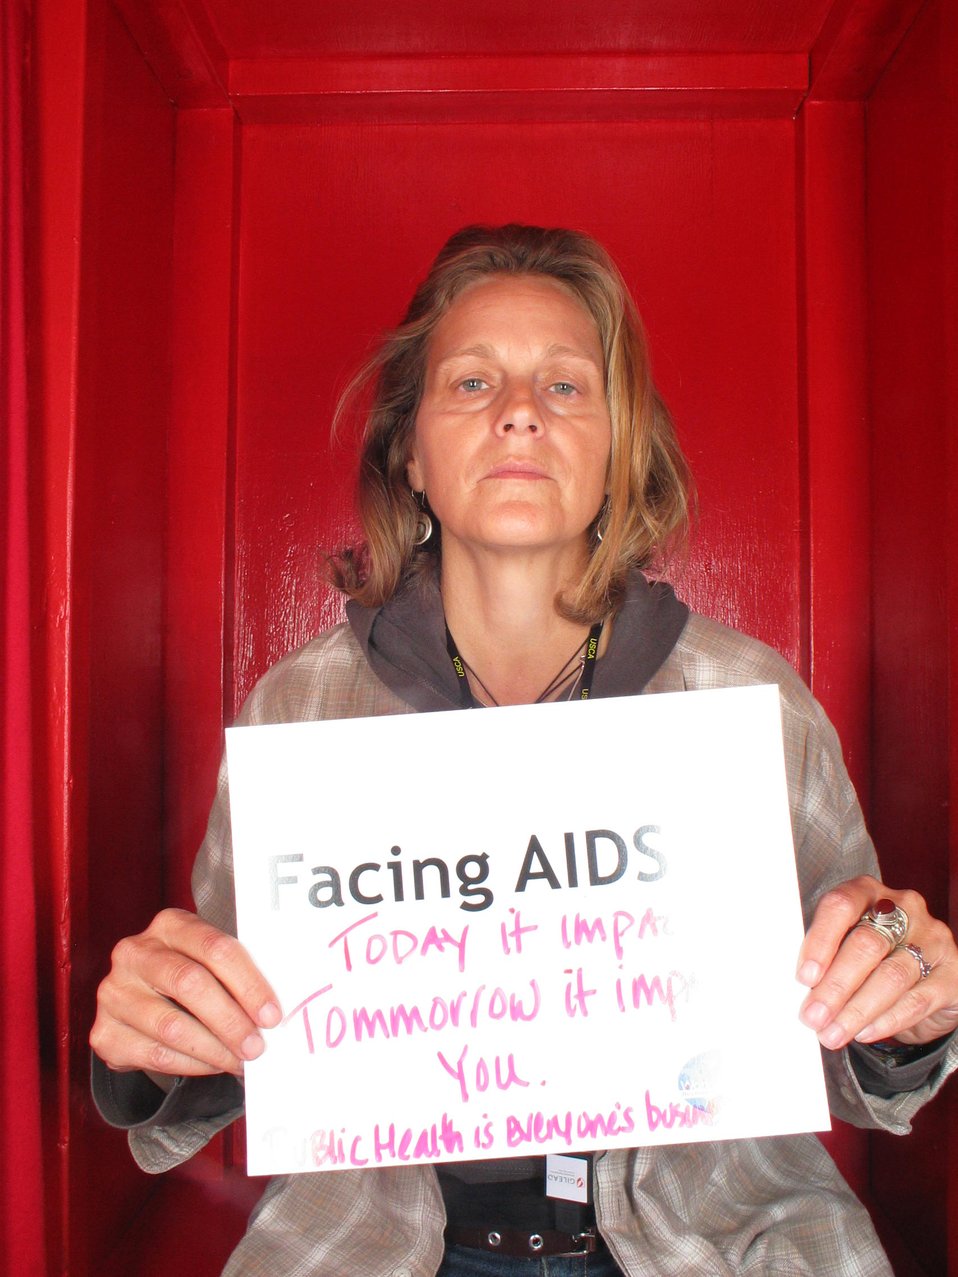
Facing AIDS today it impacts...tomorrow it impacts YOU. Public Health is everyone's business